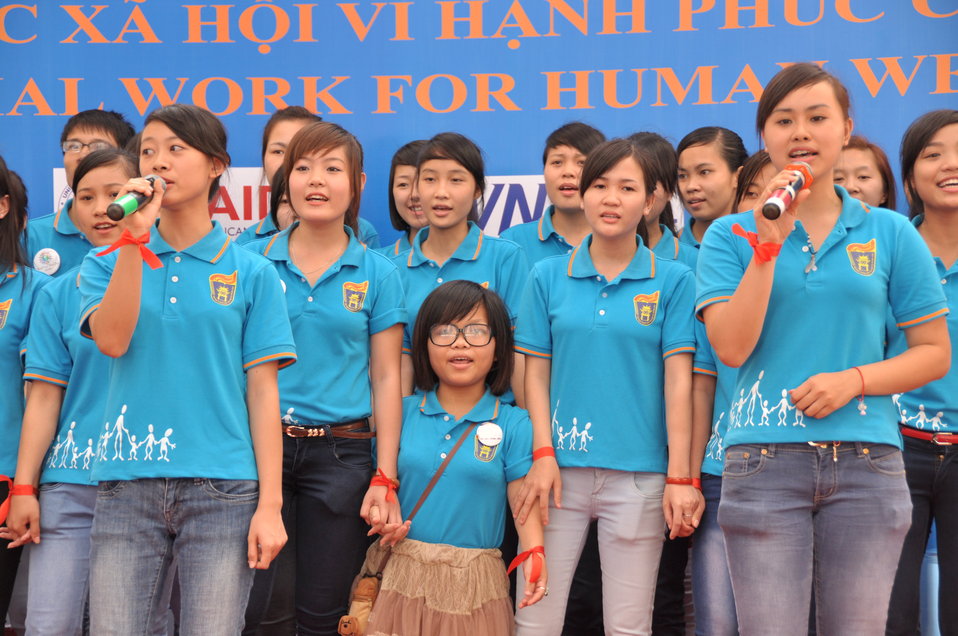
USAID Supports Social Work Education

Photo: @USAIDVietnam, November 9, 2012